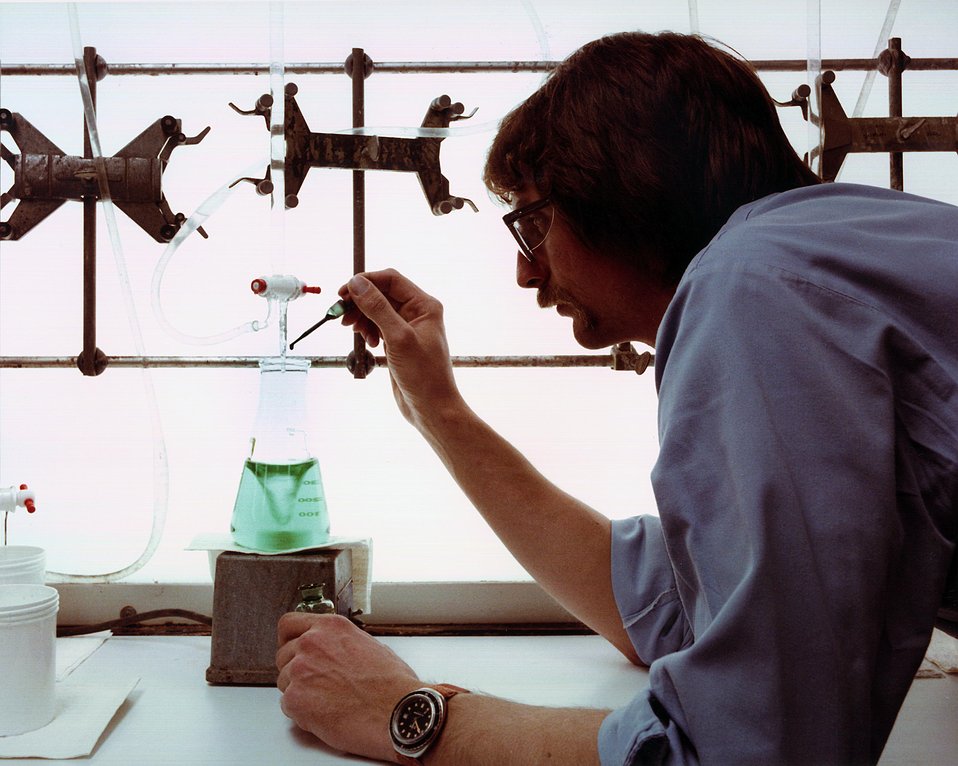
ALAN DAVIS, TECHNICAL SPECIALIST, PERFORMS TITRATION.